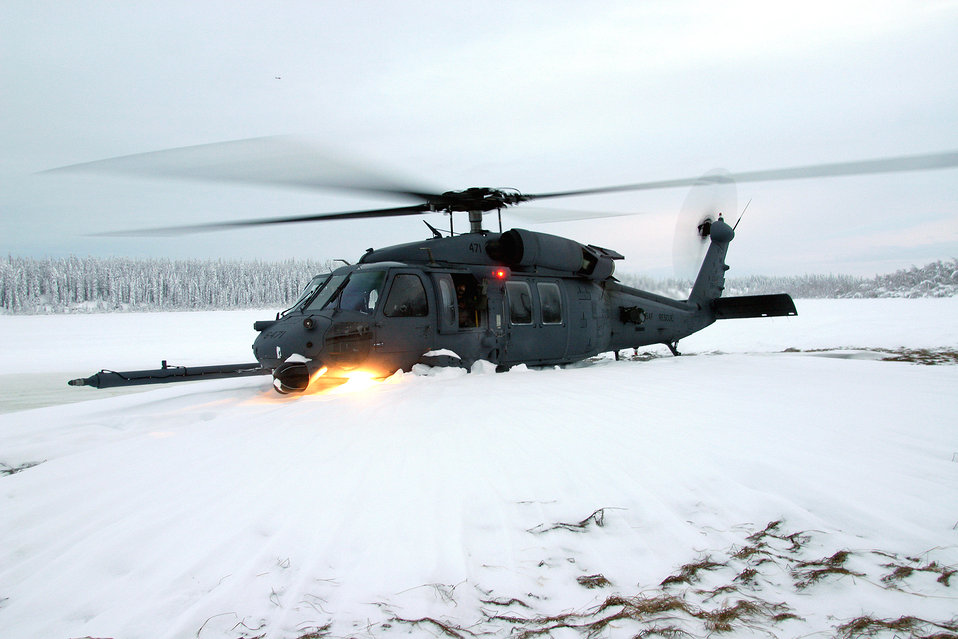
Snow problem

FAIRBANKS, Alaska -- Airmen from the Alaska Air National Guard’s 210th Rescue Squadron land their HH-60G Pave Hawk helicopter in deep snow to assist a stranded pilot with his aircraft near here Dec. 22. The civilian pilot was attempting to rescue himself, but was unable to free the aircraft on his own before the Guardsmen arrived.